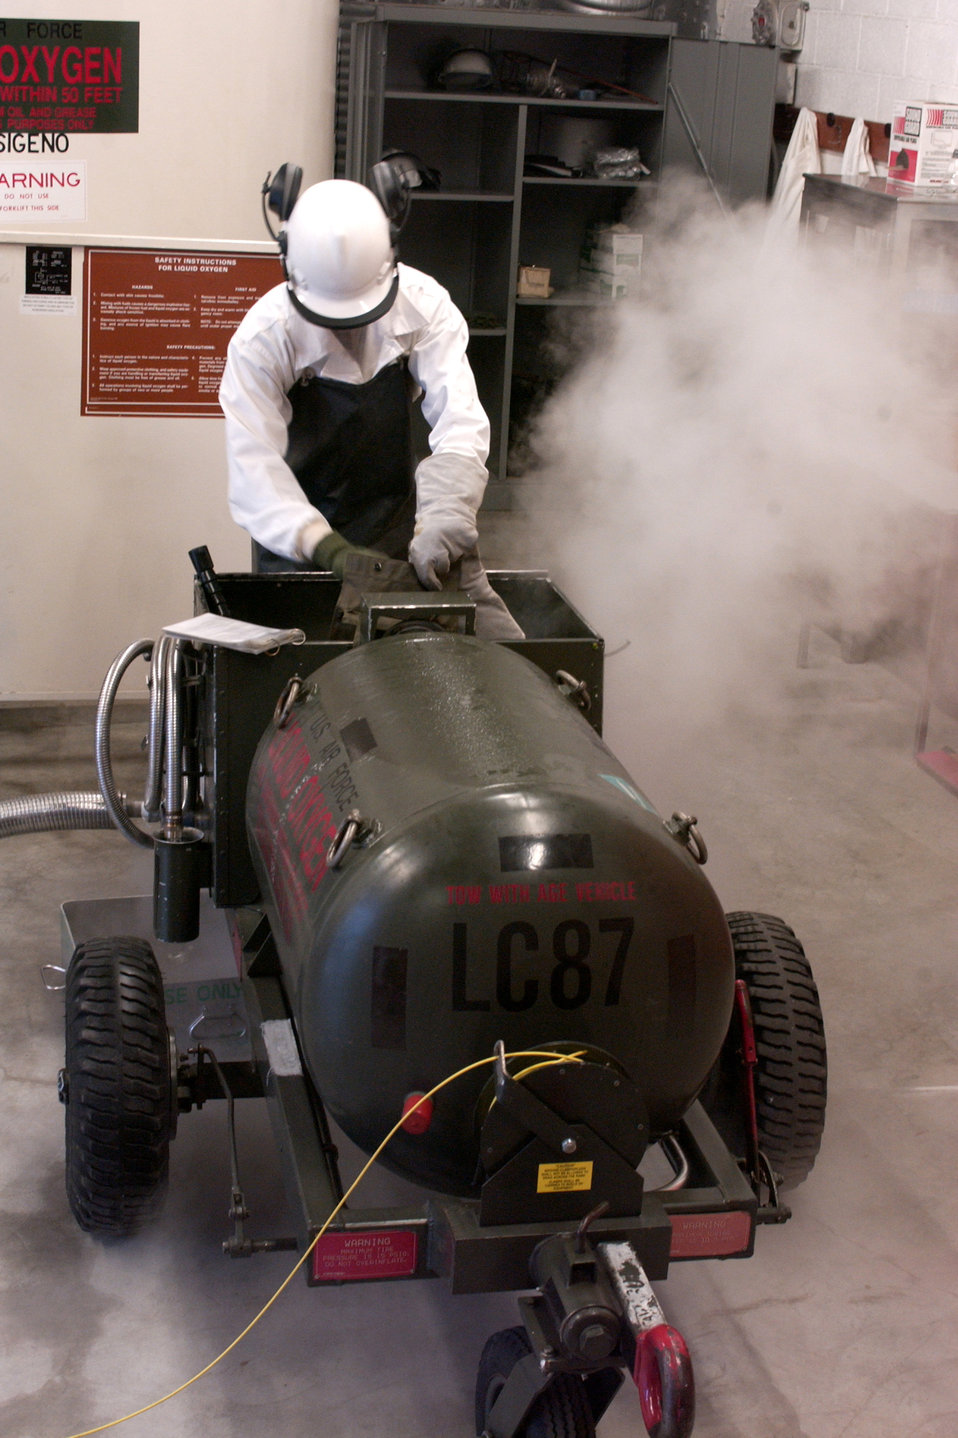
Don't spill

AVIANO AIR BASE, Italy -- Airman 1st Class Allan Selman services a liquid oxygen cart here Oct. 5. Airman Selman is a cryogenics technician assigned with the 31st Logistics Readiness Squadron.